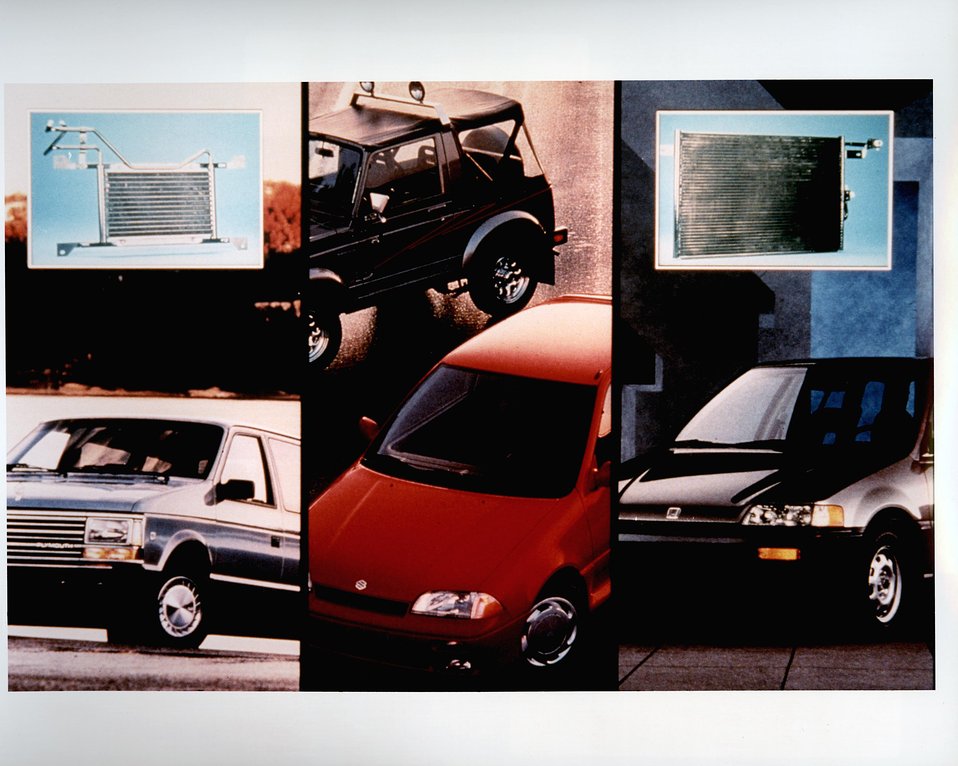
PF OIL COOLER (LEFT) AND PF CONDENSER (RIGHT) AND SOME OF THE VEHICLES THAT USE THEM.

PF HEAT EXCHANGERS (AIR-CONDITIONER CONDENSERS AND OIL COOLERS) BY MODINE MANUFACTURING OF RACINE, WI, ARE BEING USED INCREASINGLY BY VEHICLE MANUFACTURERS. JOINT RESEARCH WITH ANL HELPED MODINE TO IMPROVE THE DESIGN OF ITS COMPACT, EFFICIENT AIR CONDITIONER CONDENSER. CHRYSLER MINI VANS USE PF OIL COOLERS ON MODELS EQUIPPED WITH A TOWING PACKAGE AND HAVE PF CONDENSERS AVAILABLE AS REPLACEMENT PARTS. SUZUKI VEHICLES AND HONDAS USE PF CONDENSERS.